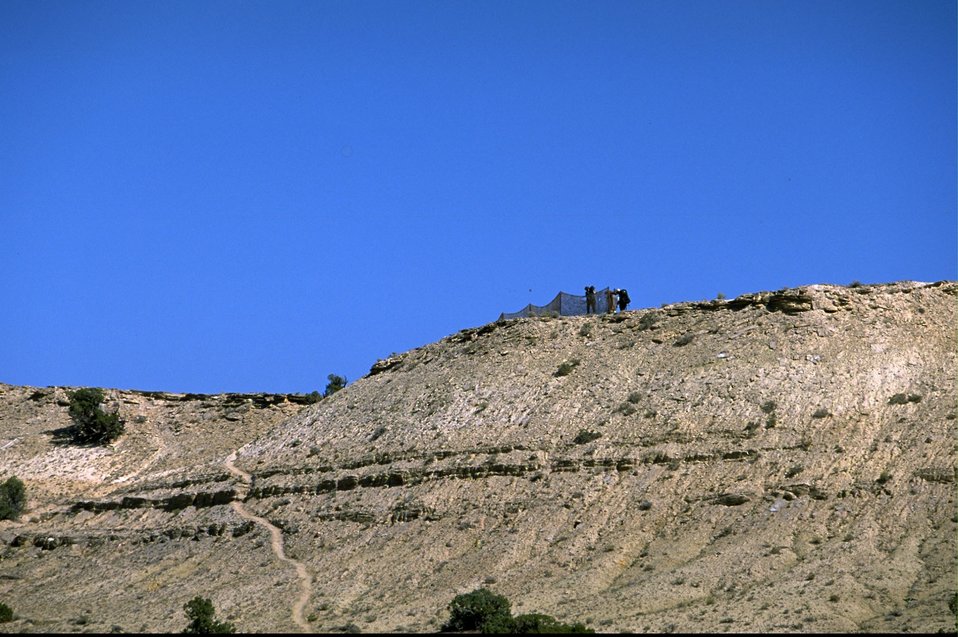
Pryor Mountain National Wild Horse Range